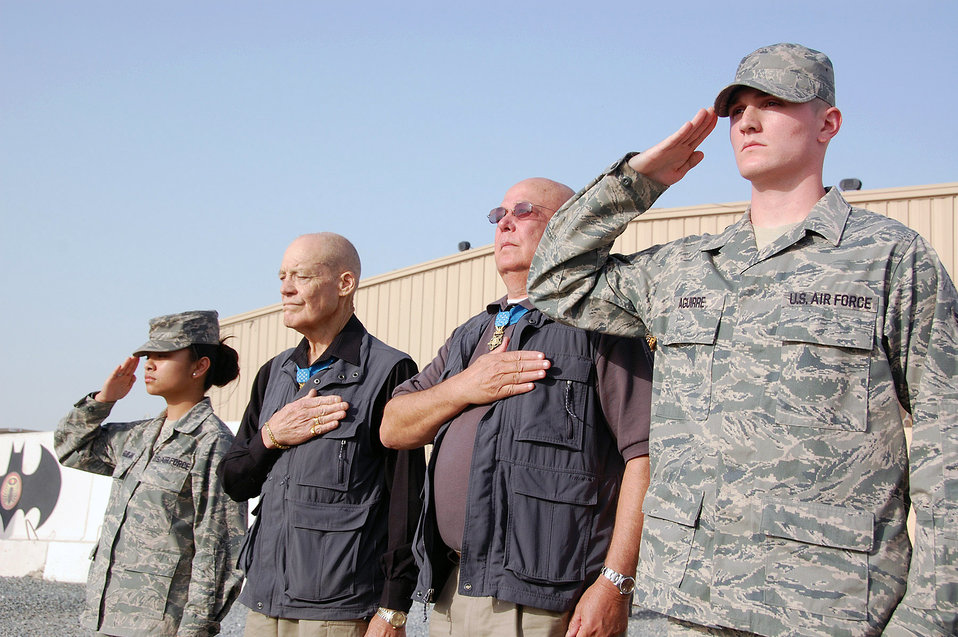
Medal of Honor recipients visit Airmen in Southwest Asia

Medal of Honor recipients retired Army Col. Robert Howard and retired Army Command Sgt. Maj. Gary Littrell are flanked by Airmen 1st Class Alyssa Aguilar and Matthew Aguirre as they render honors to the flag during a retreat ceremony April 10 at an air base in Southwest Asia. Colonel Howard and Sergeant Major Littrell visited with members of the 386th Air Expeditionary Wing during a Medal of Honor Society tour of the U.S. Air Forces Central area of responsibility. Airmen Aguilar and Aguirre are assigned to the 386th Expeditionary Medical Group.